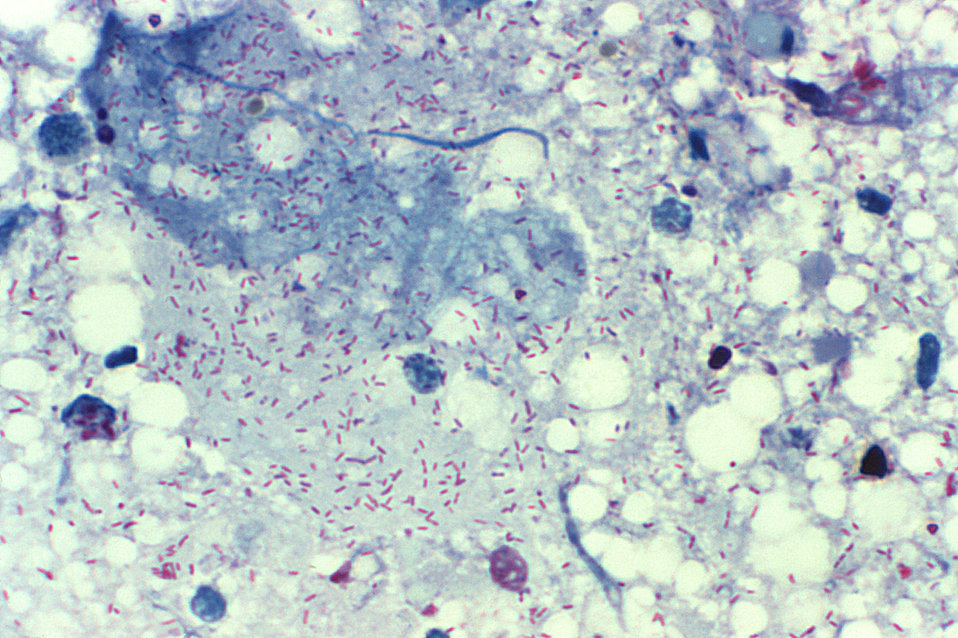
This photomicrograph of a Gimenez-stained yolk sac smear revealed the presence of Rickettsia rickettsii bacteria, which are the cause of Rocky Mountain spotted fever (RMSF). These bacteria range in size from 0.2 x 0.5 micrometers to 0.3 x 2.0 micrometers. They are difficult to see in tissues by using routine histologic stains, and generally require the use of special staining methods, such as the Gimenez stain used in this case.